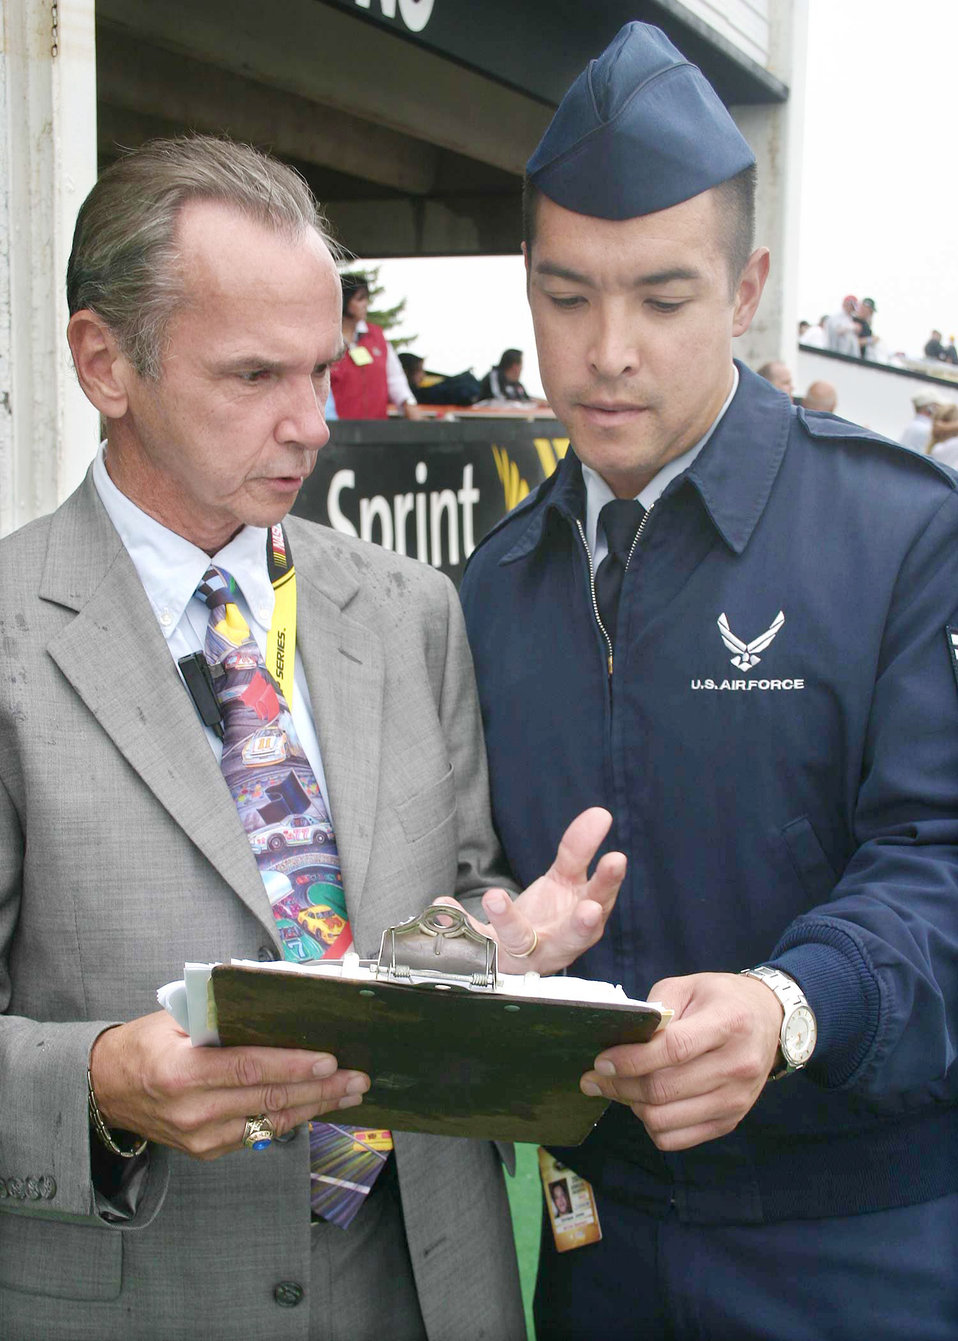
Teamwork vital to promoting Air Force awareness

Bob Pallo, Pocono Raceway vice president and Tech. Sgt. Rick Jones finalize last-minute details for the pre-race festivities at the Pennsylvania 500 race earlier this year. Sergeant Jones is the NCO in charge of the Air Force NASCAR program.